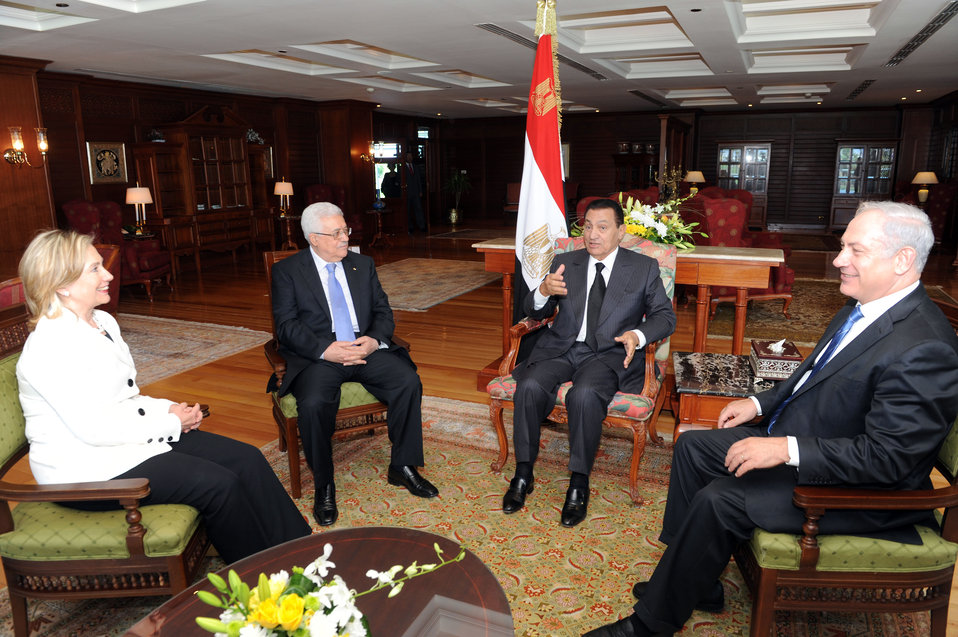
Egyptian President Mubarak Welcomes Secretary Clinton, Palestinian President Abbas, and Israeli Prime Minister Netanyahu

Egyptian President Hosni Mubarak welcomes (left to right) U.S. Secretary of State Hillary Rodham Clinton, Palestinian President Mahmoud Abbas, and Israeli Prime Minister Benjamin Netanyahu in Sharm El-Sheikh, Egypt, on September 14, 2010.